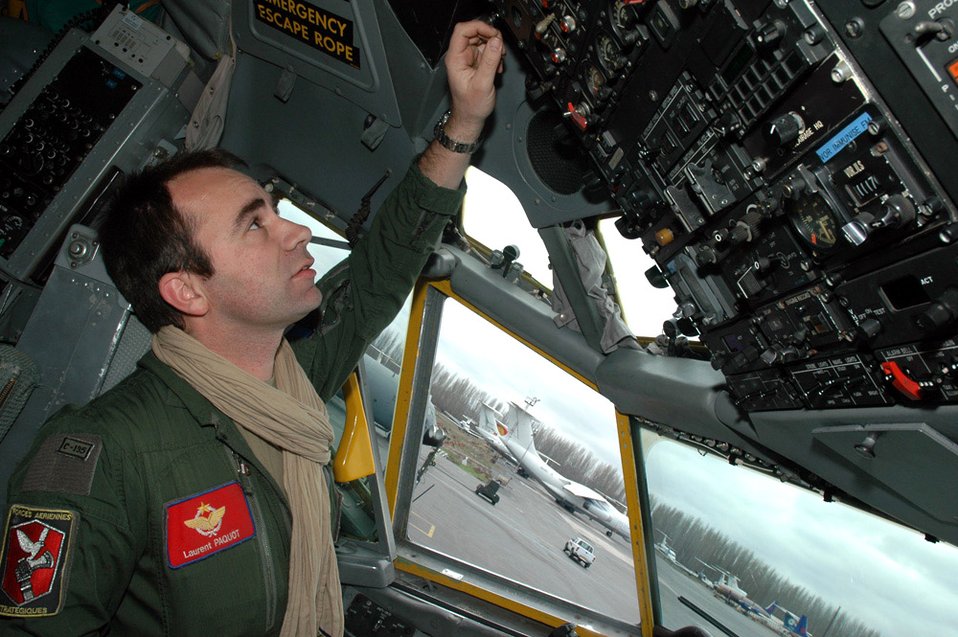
French help fuel Operation Enduring Freedom

Maj. Laurent Paquot, the French coalition detachment commander, at the controls of the C-135FR after a landing at Manas Air Base, Kyrgyzstan. The Flight Refueling Group 93